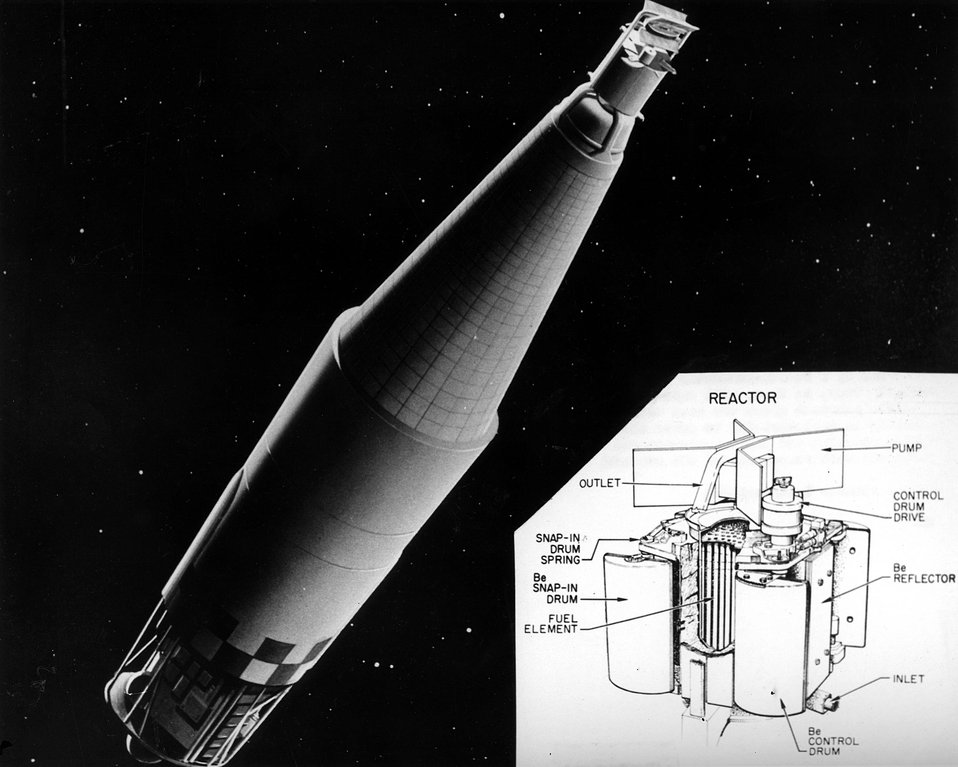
First Reactor into space...Producing 500 watts of auxiliary power for equipment and instrumentation in space vehicles and satellites, the SNAP 10A is expected to launch during 1964.